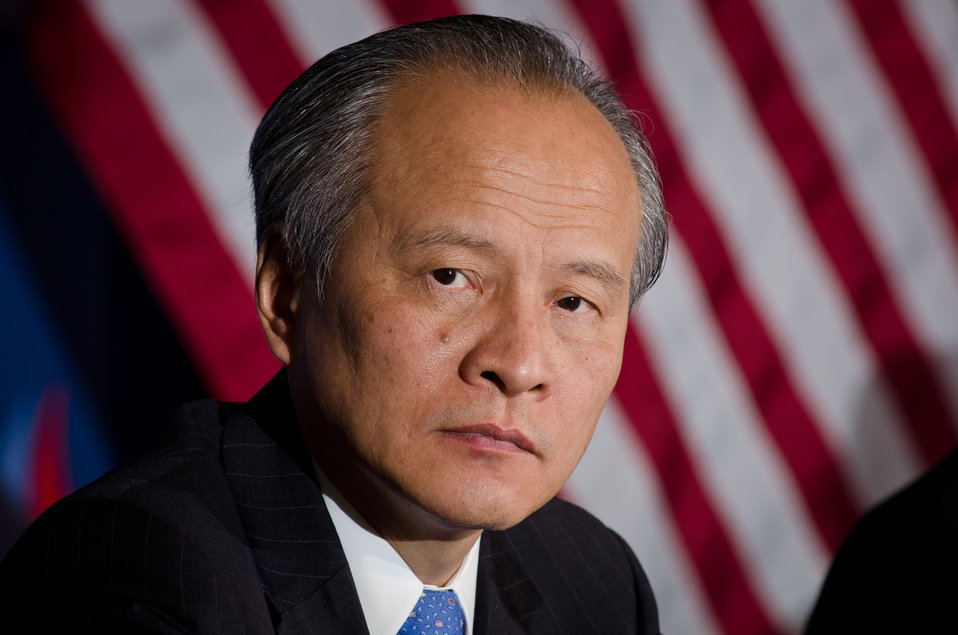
China's Vice Foreign Minister Cui Tiankai listens to a question from international news media journalists at the 23rd Session of the U.S. China Joint Commission on Commerce and Trade (JCCT) press conference at the Andrew W. Mellon Auditorium in Washington, D.C. on Wednesday, Dec. 19, 2012. The JCCT holds high-level plenary meetings on an annual basis to review progress made by working groups that focus on a wide variety of trade issues. These working groups meet throughout the year to address topics such as intellectual property rights, agriculture, pharmaceuticals and medical devices, information technology, tourism, commercial law, environment, and statistics.